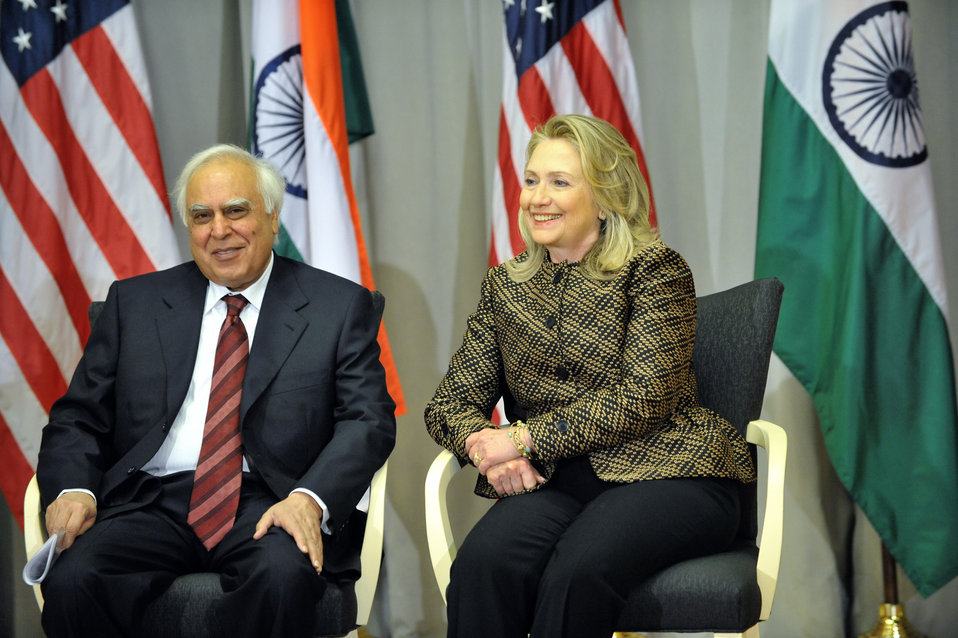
Secretary Clinton Delivers Remarks at the U.S.-India Higher Education Summit

U.S. Secretary of State Hillary Rodham Clinton delivers remarks with Indian Minister for Human Resource Development Kapil Sibal at the U.S.-India Higher Education Summit at the George C. Marshall Center in Washington, D.C. on June 12, 2012.